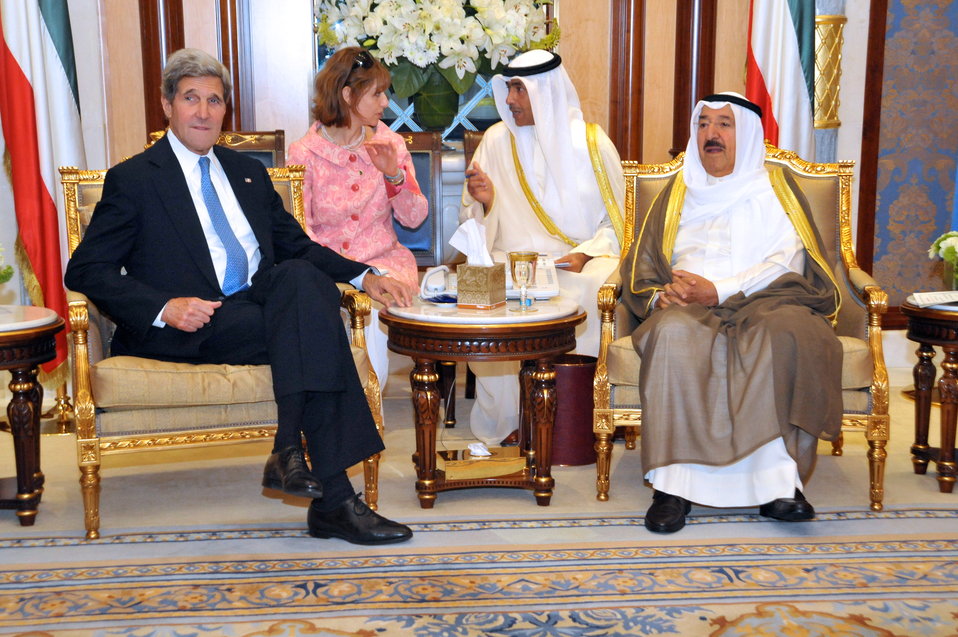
Secretary Kerry Meets With the Amir of Kuwait

U.S. Secretary of State John Kerry meets with Kuwaiti Amir Sheikh Sabah Al-Ahmed Al-Sabah during a visit to Kuwait City, Kuwait, on June 26, 2013.